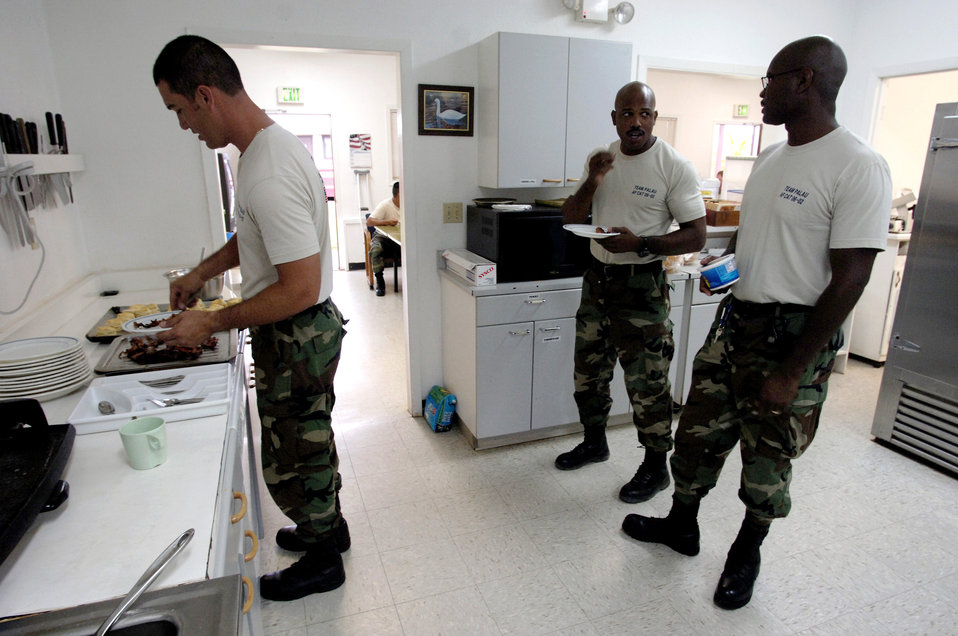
Taking Action

BABLEDAOB, Palau (AFPN) -- Tech. Sgts. Jamie Pahukoa and Frank Strong and Master Sgt. Wesley Matthews get their breakfast before starting the day. The three are with the Palau civil action team. The mission of the program is twofold. It aids host nations in their basic infrastructure development and provides a favorable U.S. military presence through community construction, apprentice training, a medical civic action program and community relations.